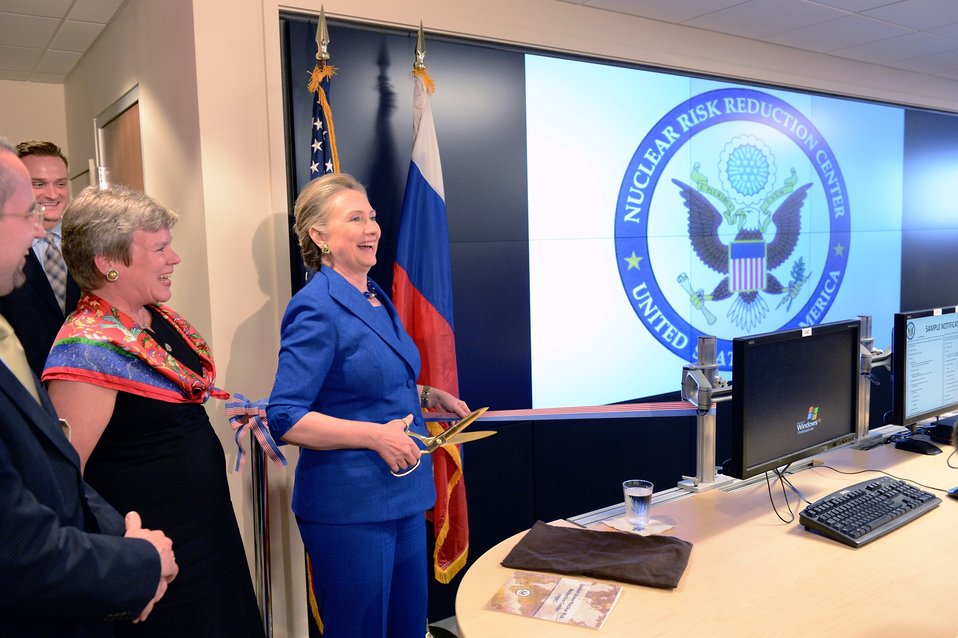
Secretary Clinton Delivers Remarks at the Ribbon-Cutting Ceremony for the new Department of State Modernized Nuclear Risk Reduction Center

U.S. Secretary of State Hillary Rodham Clinton delivers remarks at the Ribbon-Cutting Ceremony for the new Department of State Modernized Nuclear Risk Reduction Center at the U.S. Department of State in Washington, D.C., October 24, 2012.